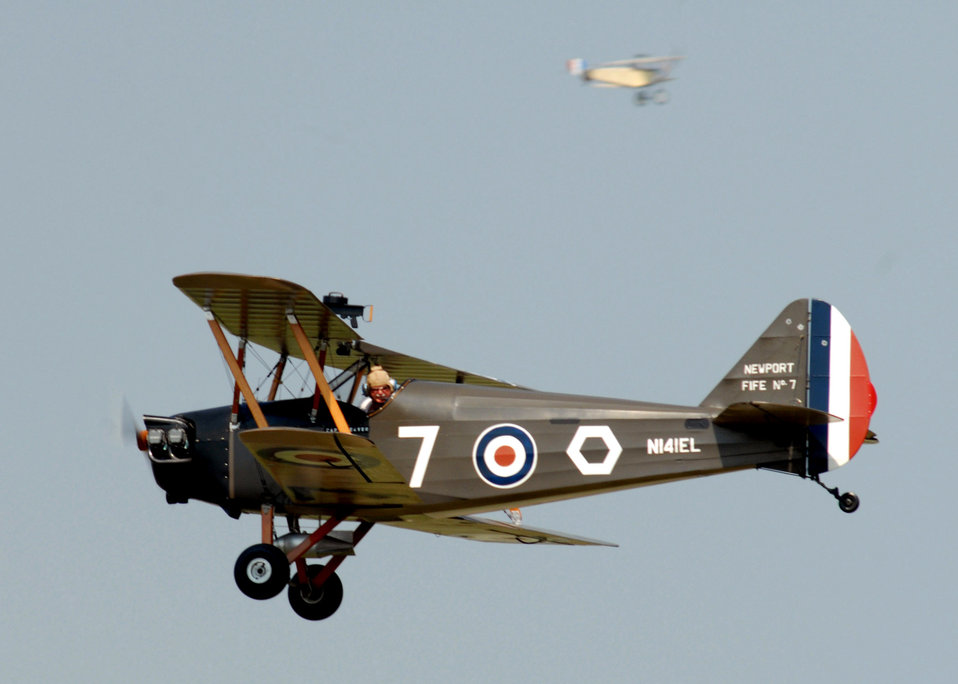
World War 1 Fly In

A pilot checks his bomb placement after dropping a